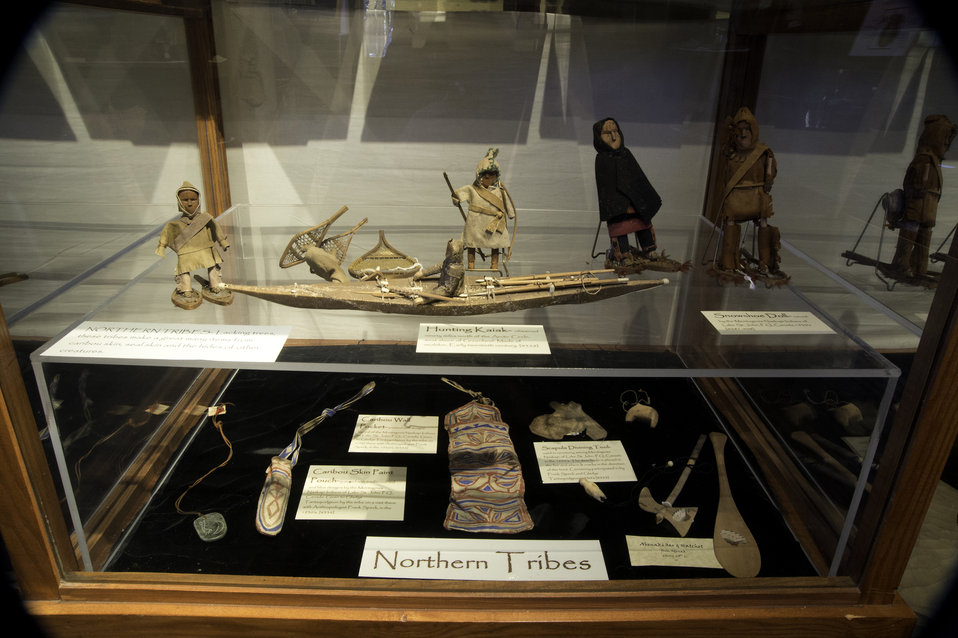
The Mohegan Tribe’s museum is the oldest Indian owned and operated museum in America. Gladys Tantaquidgeon along with her brother, Harold and father John, built the museum in 1931 in Uncasville, CT as a place to keep Mohegan treasures.